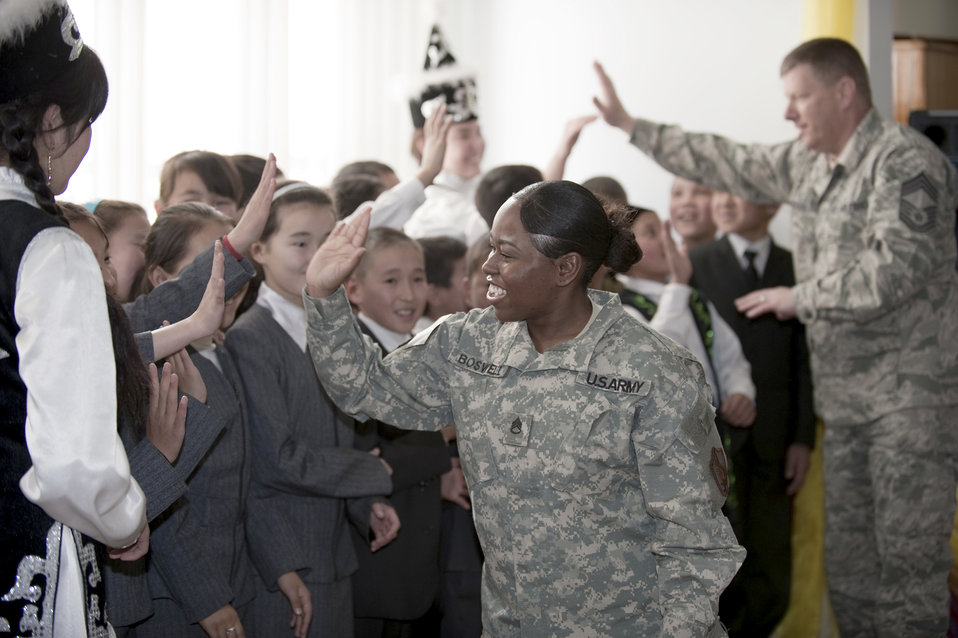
Kyrgyz, U.S. servicemembers distribute coats to Koi-Tash students

Army Staff Sgt. Zenia Boswell and Chief Master Sgt. Leland Becker high-five Chuiskaya Region Boarding School-Gymnasium students Nov. 11, 2010, at their school in Koi Tash, Kyrgyzstan. Kyrgyz and U.S. military members gave students coats, blankets and hats as part of Operation Warm and Dry II. Sergeant Boswell is assigned to the U.S. Embassy, and Chief Becker is assigned to the Transit Center at Manas.